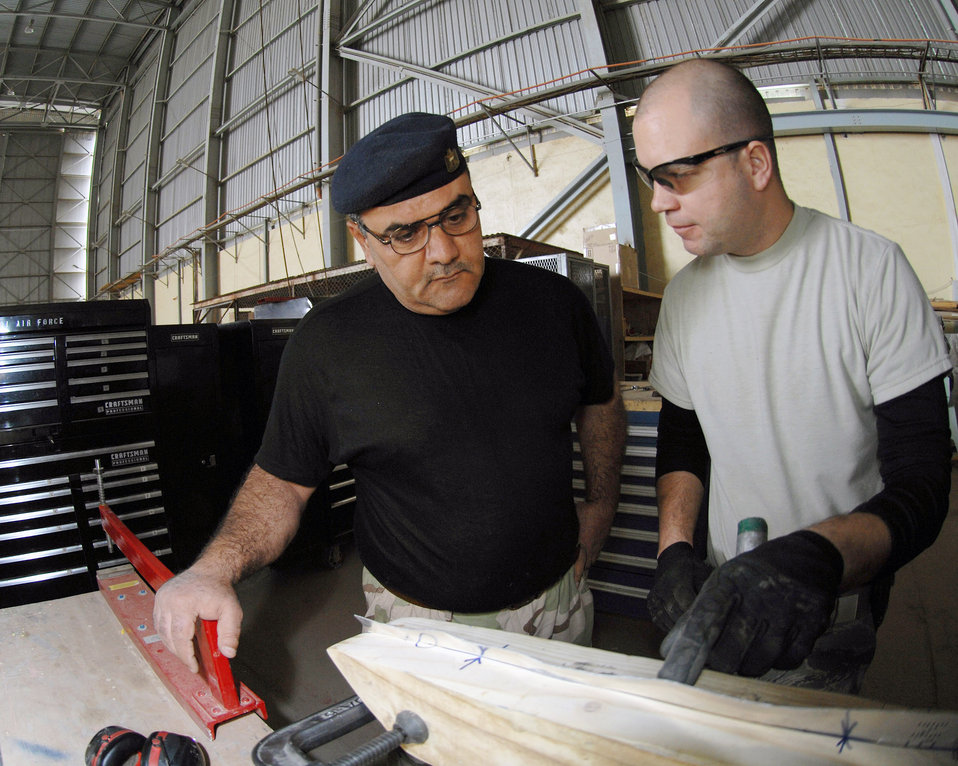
Airmen teach Iraqi air force members aircraft maintenance

Tech. Sgt. Bobby McKenzie explains how to hand form a piece of sheet metal in the shape of an aircraft rib using forming blocks to one of his Iraqi students Feb. 20 at Sather Air Base, Iraq. Sergeant McKenzie is a 321st Air Expeditionary Advisory Squadron aircraft structural maintenance adviser deployed from Little Rock Air Force Base, Ark. He is a native of Manchester, Tenn.